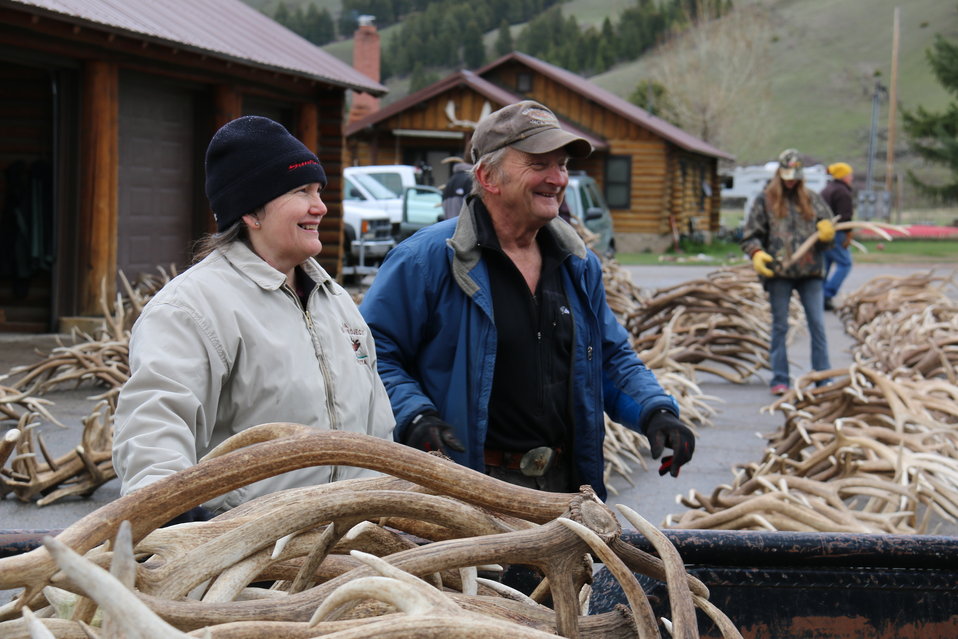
Taking a Break

Despite the cold weather and their long day of sorting antlers, two Scout leaders take a moment to share a laugh.